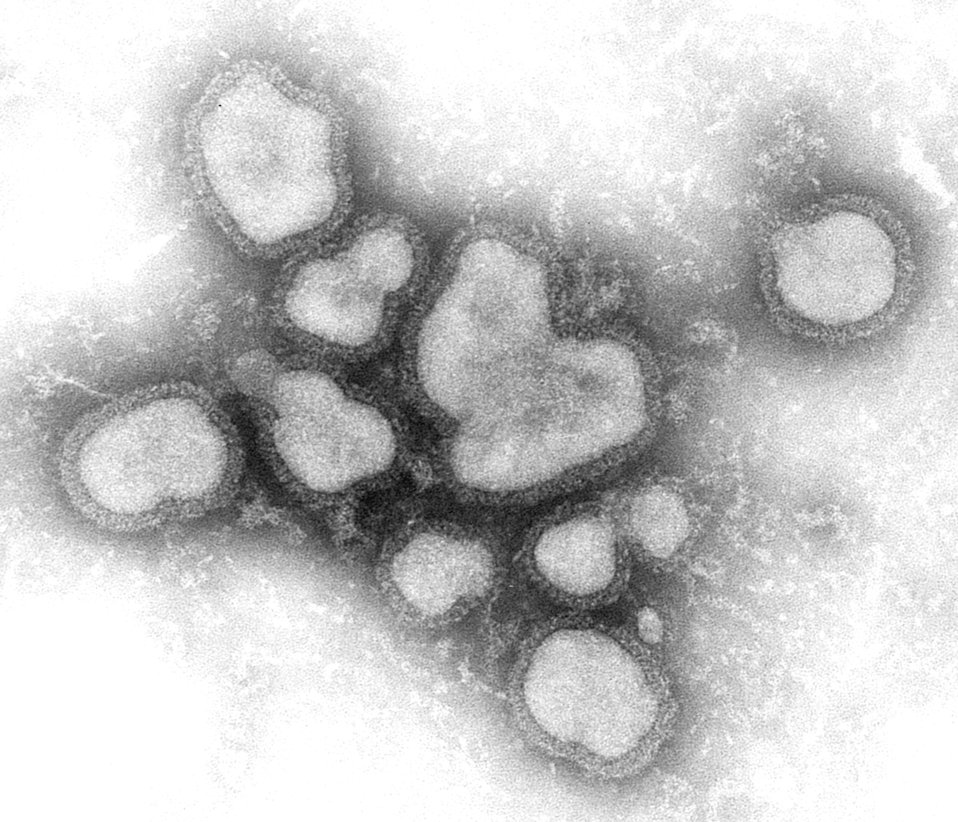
This negative-stained transmission electron micograph (TEM) depicted a number of influenza A virions.